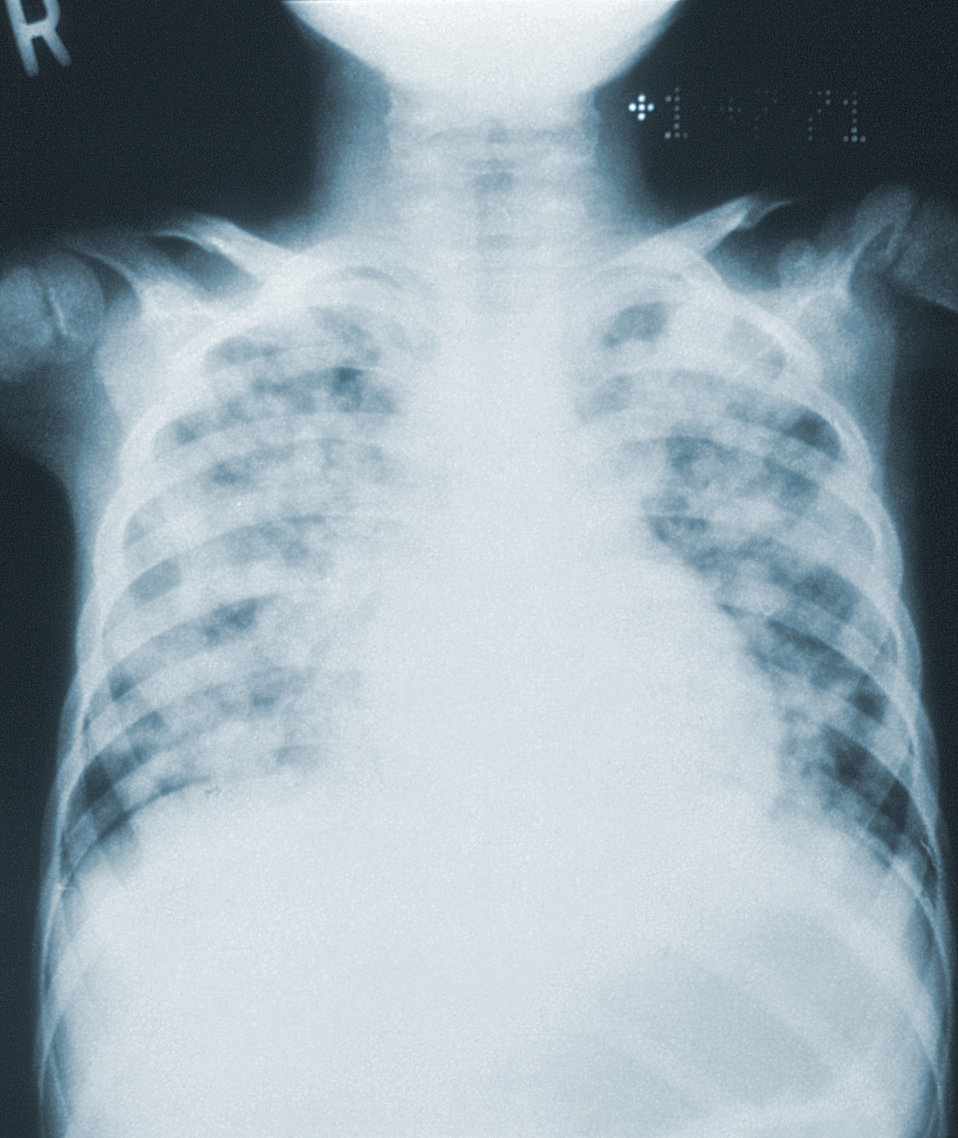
This anteroposterior (AP) radiograph revealed bilateral pulmonary infiltrates throughout the entirety of each lung field in the case of a child with leukemia, as well as chickenpox pneumonia. The fact that this child had leukemia made him that much more susceptible to contracting a pneumonic infection as evidenced here.